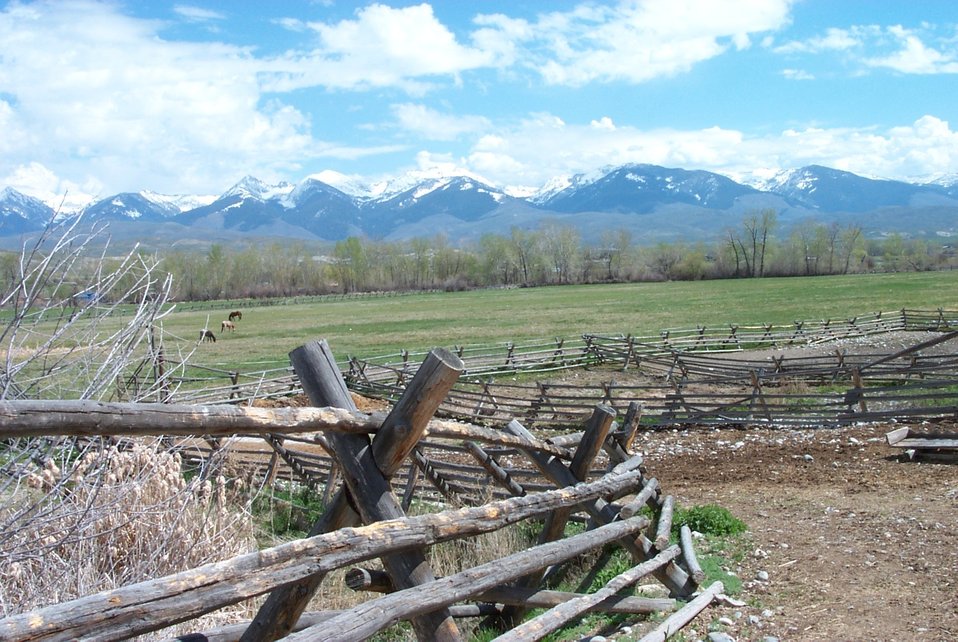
Realty Public access Exchange Salmon Field Office UCSC Upper Columbia Salmon Clearwater District